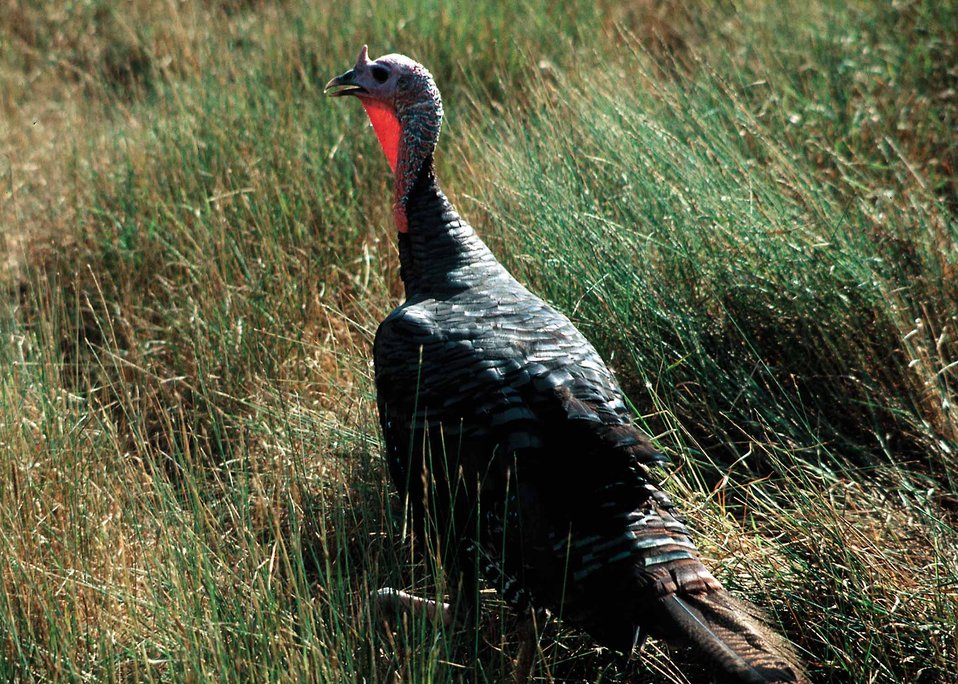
Wild turkey in native grass in southern Iowa.